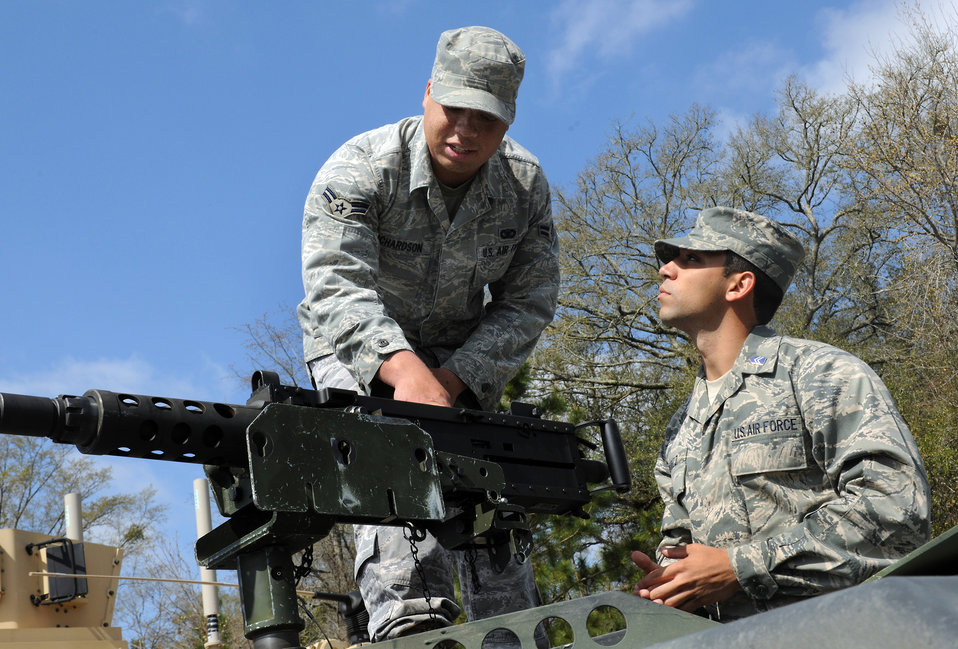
Cadets get a taste of Moody's mission, active-duty life

Airman 1st Class Kevin Richardson shows the M-2 heavy machine gun to Cadet 3rd Class Rolando Perez March 23, 2010, at Moody Air Force Base, Ga. Airman Richardson is a 823rd Security Forces Squadron fire team member, and Cadet Perez is from the University of Puerto Rico Air Force ROTC Detachment 755..